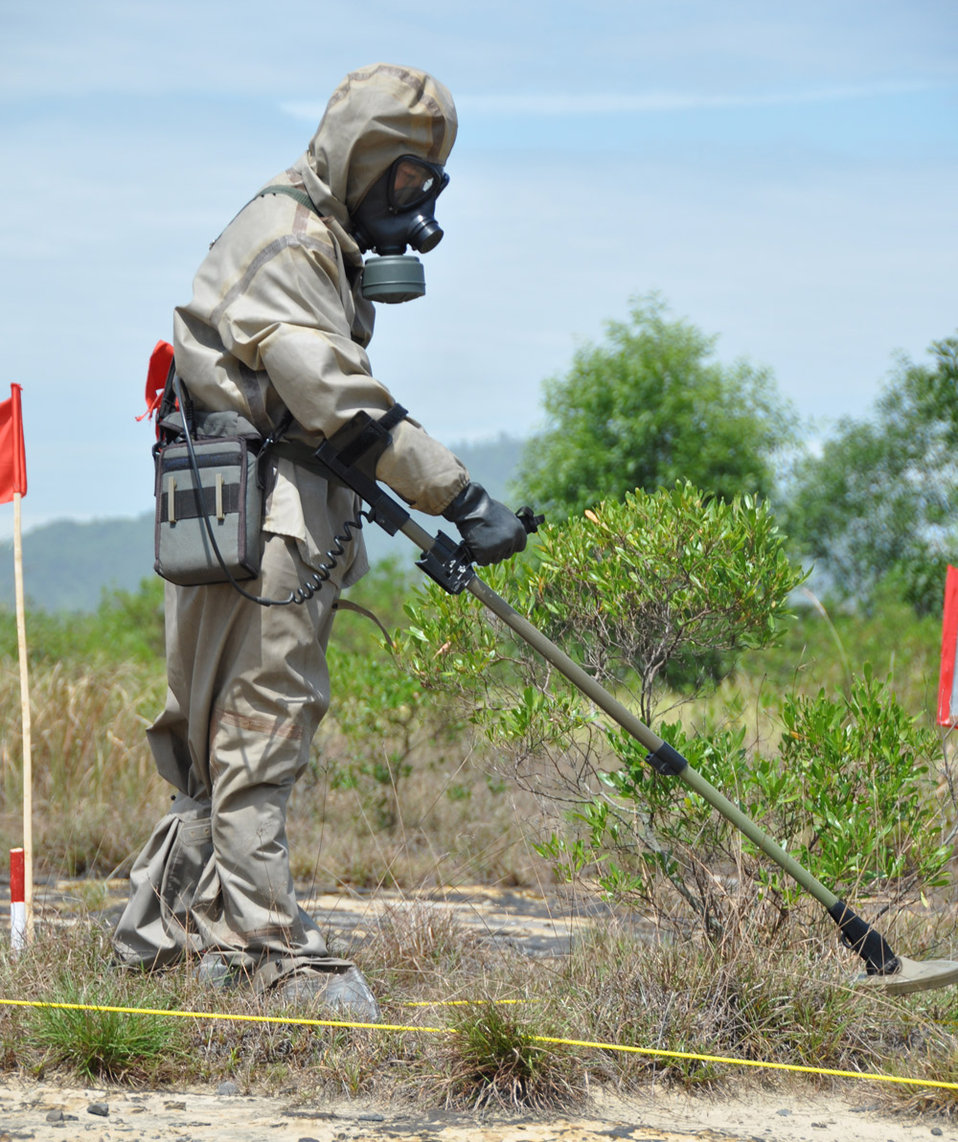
A Vietnamese soldier demonstrates UXO detection and clearance in Danang. June 17, 2011